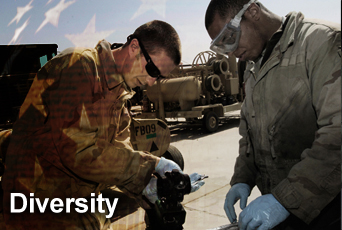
Diversity video

Air Force officials have produced a video that demonstrates the commitment of senior Air Force leaders to diversity and equal opportunity programs.